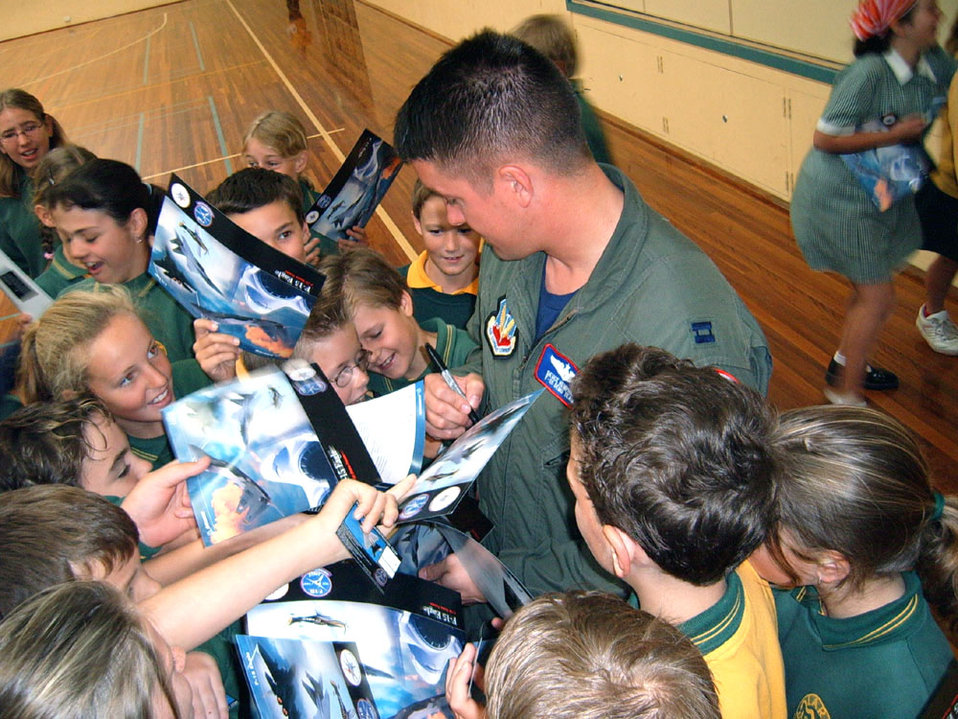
A sign of the times

LARA, Australia -- Capt. Joel Hemphill signs autographs during a visit with fifth- and sixth-graders at a primary school here March 18. Captain Hemphill and other Airmen on the F-15 Eagle West Coast Demonstration Team also visited with eighth-graders at a secondary school nearby. Captain Hemphill is the team pilot.